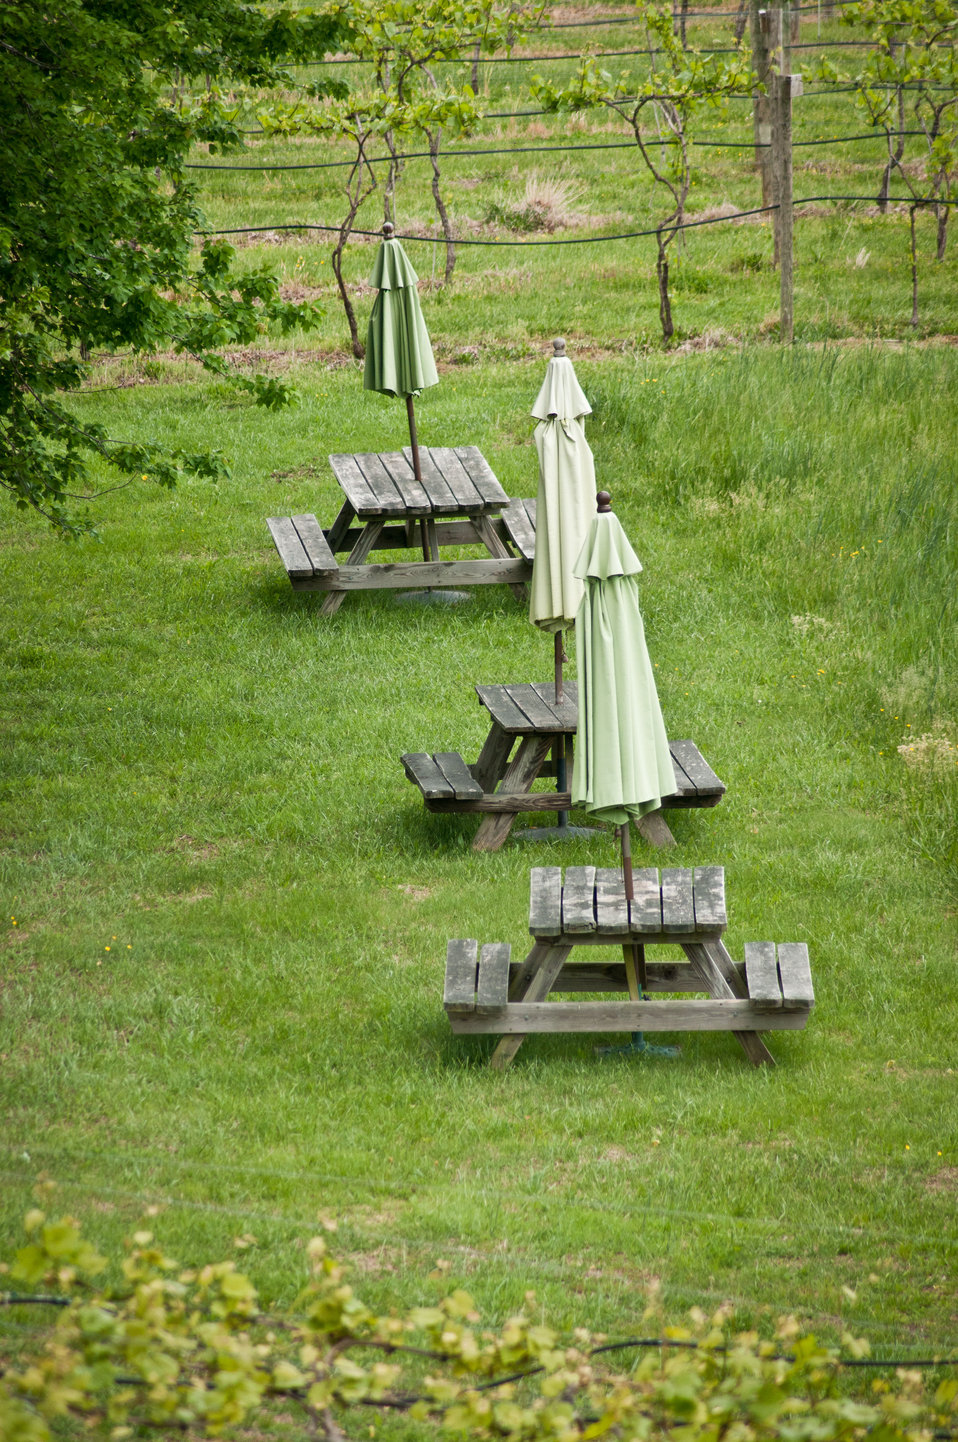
Cooper Vineyards in Louisa, VA, is the first winery on the East Coast and the second in the country to be awarded the fourth and highest, Platinum certification by Leadership in Energy and Environmental Design (LEED).
From a Virginia Wine Board Marketing Office press release, “The process of building a LEED platinum certified building was initially more expensive and arduous than co-owners, Jacque Hogge, MD and Geoffrey Cooper, MD expected, but they were able to get financial assistance from the United States Department of Agriculture. “Know that there are grants available to help with the costs of sustainable building projects,” Hogge advises to other potential green wineries. Cooper Vineyards received 2 of the 3 USDA (U.S. Department of Agriculture Rural Development (RD) Rural Energy Financing program) grants awarded in Virginia in 2010 to help with the expenses of their construction.”
Rural Energy Financing program focuses on loan guarantees, loans and grants to agricultural producers, businesses, cooperatives and rural residents for renewable energy systems and to make energy efficiency improvements.
The tasting room and building collects rainwater from the roof; uses low flow water fixtures to reduce usage by 40%; utilizes structurally insulated panels for the roof and walls; heats and cools the entire building using a geothermal system that includes pipes that are embedded in the parking lot; low-voltage LED lighting with daylight and occupancy sensors provide ample light when it is needed; a solar panel array provides more than 15% of the energy needs for the building, and much of the construction materials are from local and recycled material sources. For more information about USDA please go to www.usda.gov, Rural Development and Rural Energy Financing. LEED was developed by the U.S. Green Building Council (USGBC) is a 501 c3 non-profit organization committed to a prosperous and sustainable future for our nation through cost-efficient and energy-saving green buildings.